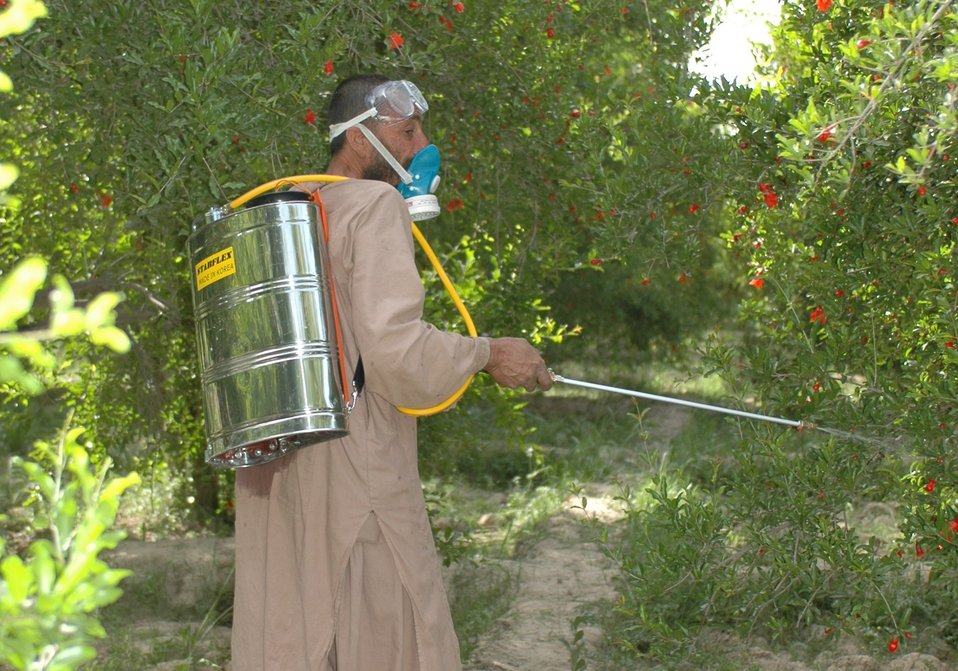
Dr Shah Visits Argandab April 10, 2010